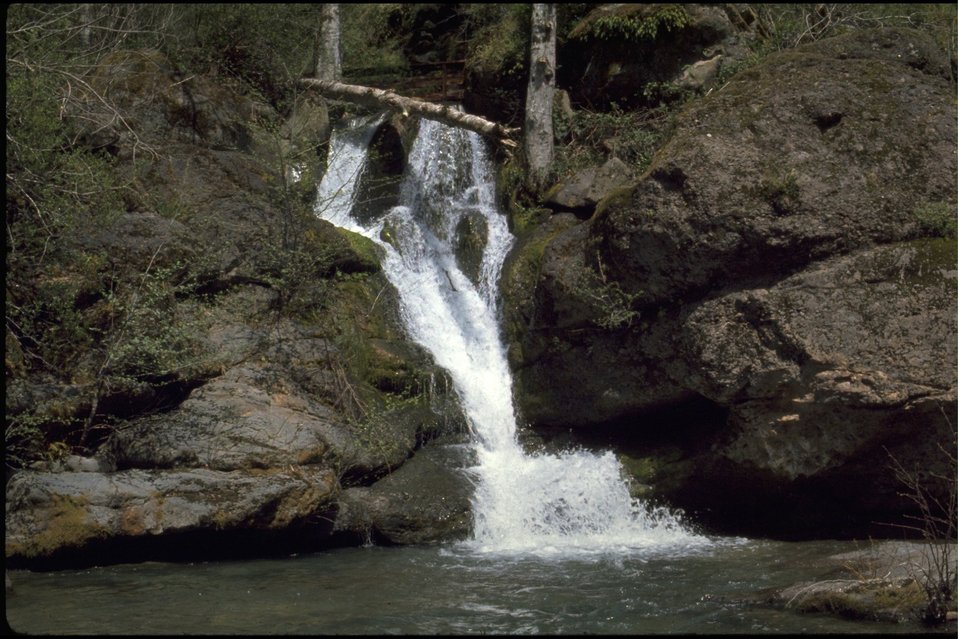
Rogue River, waterfall.